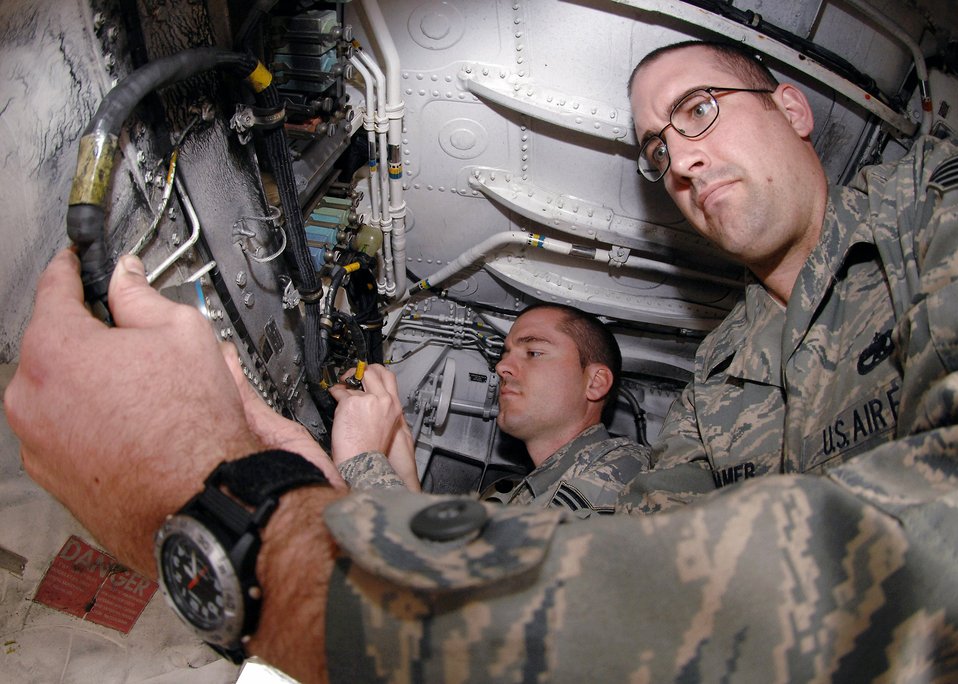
Teamwork puts F-15E back in the fight

Staff Sgts. Robert Townson (left) and Jason Cramer work on the right side electrical distribution harness on an F-15E Strike Eagle March 4 at Bagram Air Base, Afghanistan. Both sergeants are electro-environmental specialists with the 455th Expeditionary Aircraft Maintenance Squadron and are deployed from the 335th Aircraft Maintenance Squadron at Seymour Johnson Air Force Base, N.C.